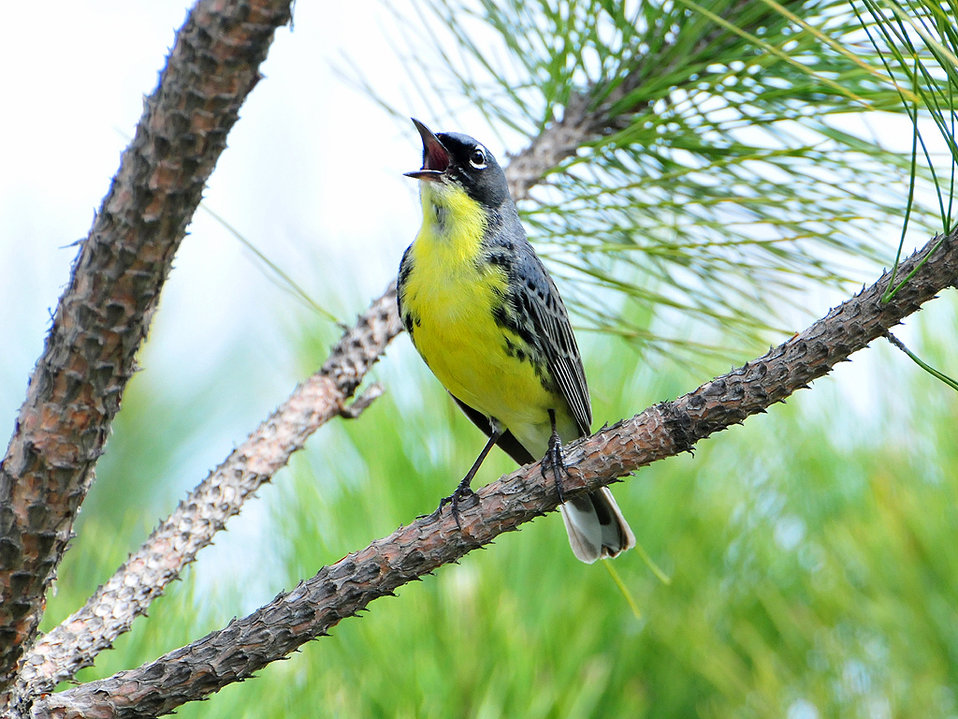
Endangered Kirtland's warbler (Dendroica kirtlandii)

Learn about the historical importance of fire in managing healthy jack pine forests in Michigan, which the endangered Kirtland’s warbler depends: www.fws.gov/endangered/news/episodes/bu-10-2011/kirtlands...